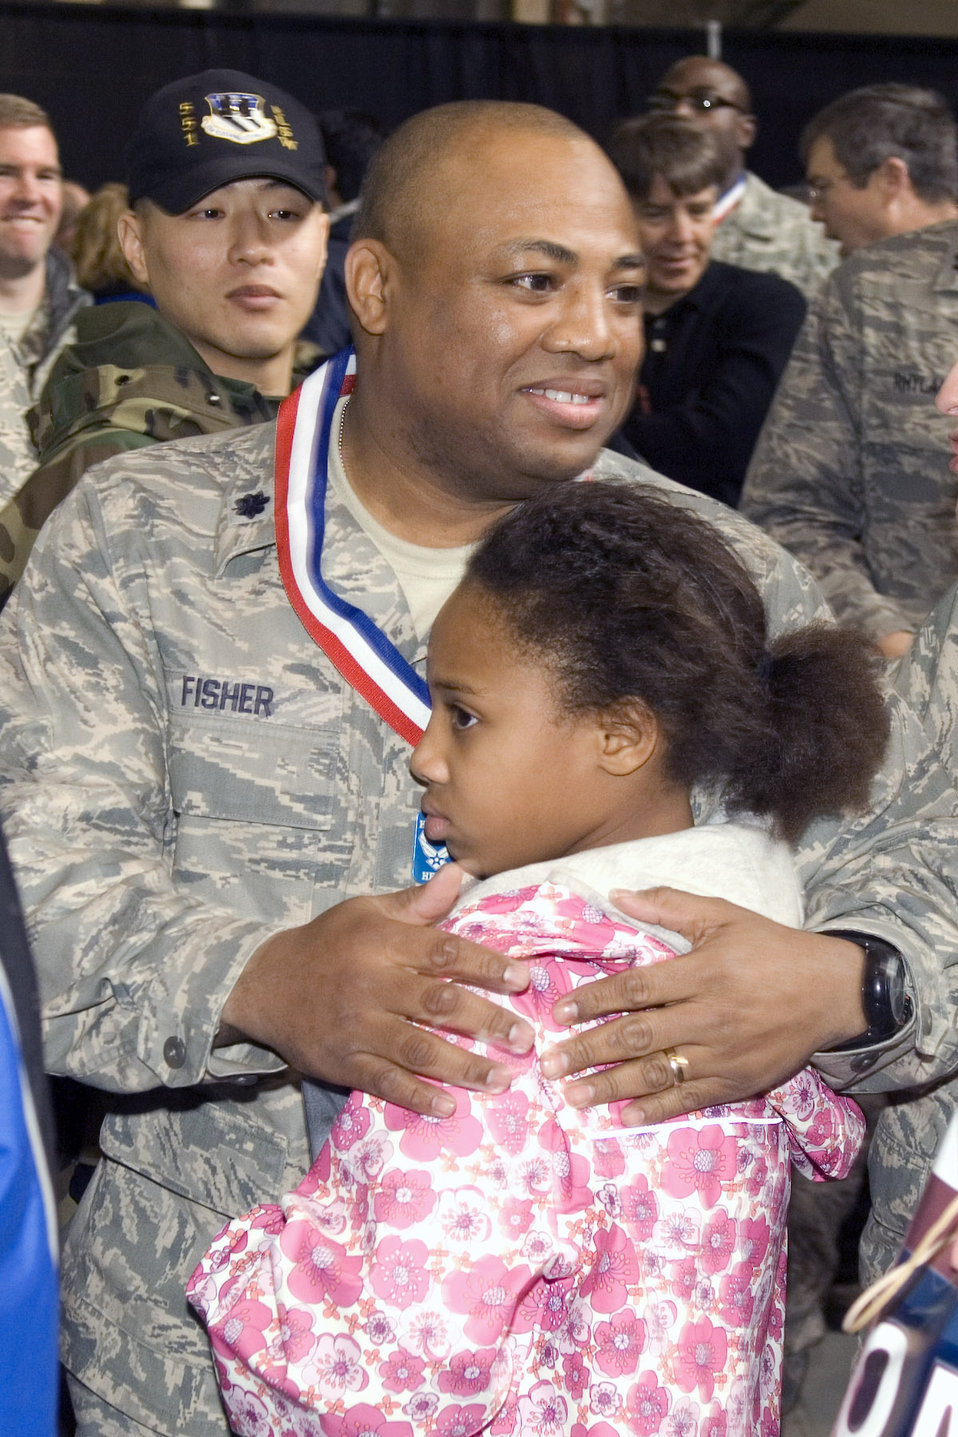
Hanscom heroes welcomed home

Lt. Col. Tyron Fisher hugs his daughter Tyra during the Heroes' Homecoming celebration Dec. 12 at Hanscom Air Force Base, Mass. The event officially welcomed home base Airmen who deployed over the past six months. Colonel Fisher returned from his deployment to Iraq one hour before the start of the ceremony. He is the 632nd Electronic Systems Squadron commander.